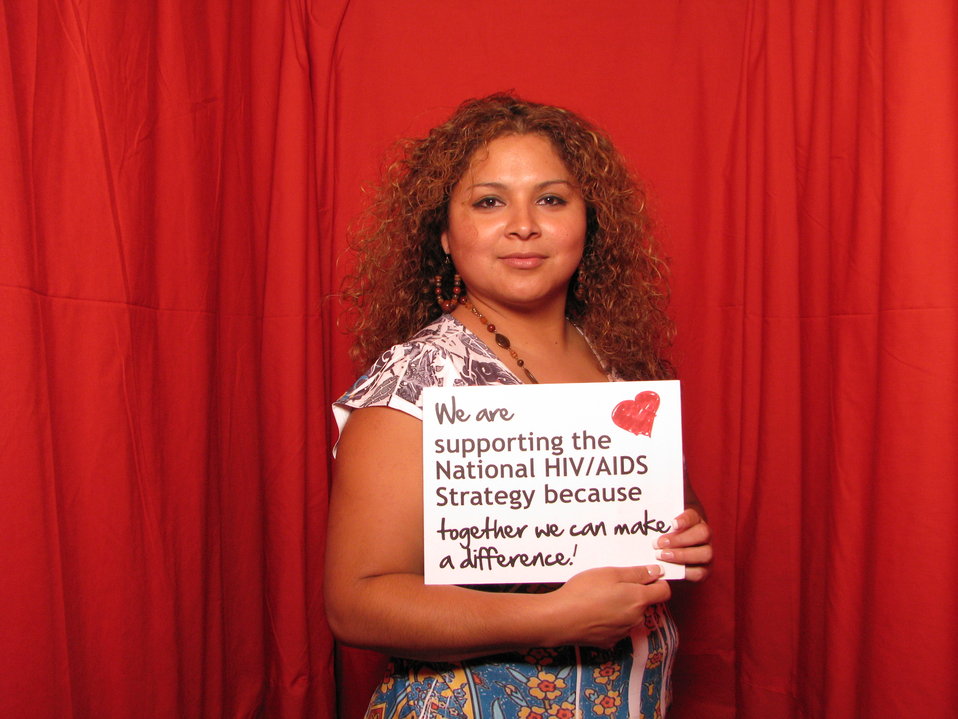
We are supporting the National HIV/AIDS Strategy because together we can make a difference!

From the AIDS.gov photo booth at the U.S. Conference on AIDS, September 2010 (Orlando, FL).